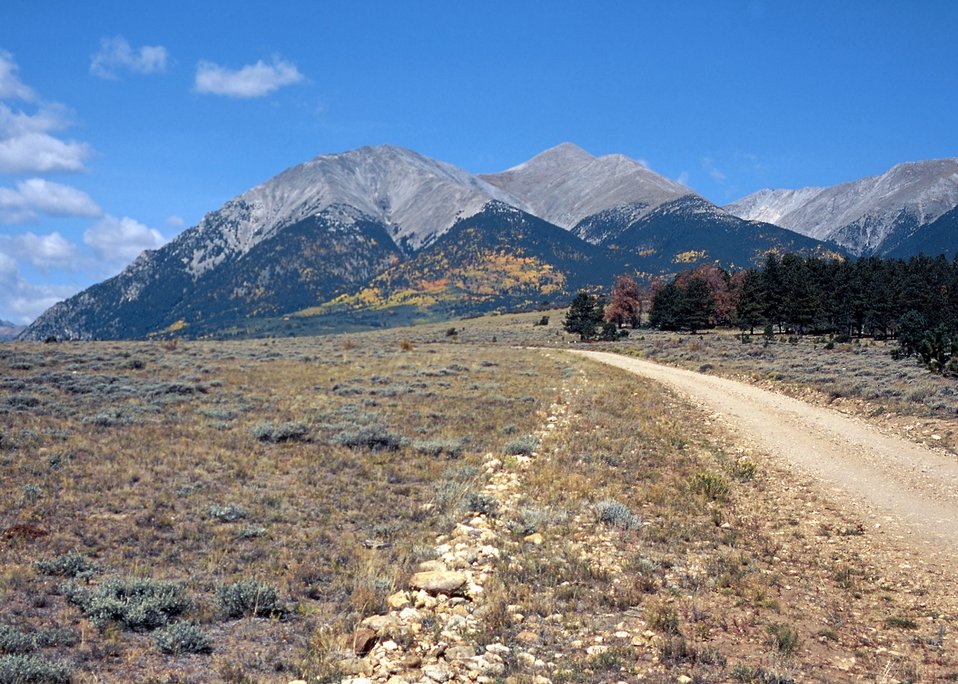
Colligiate Peak